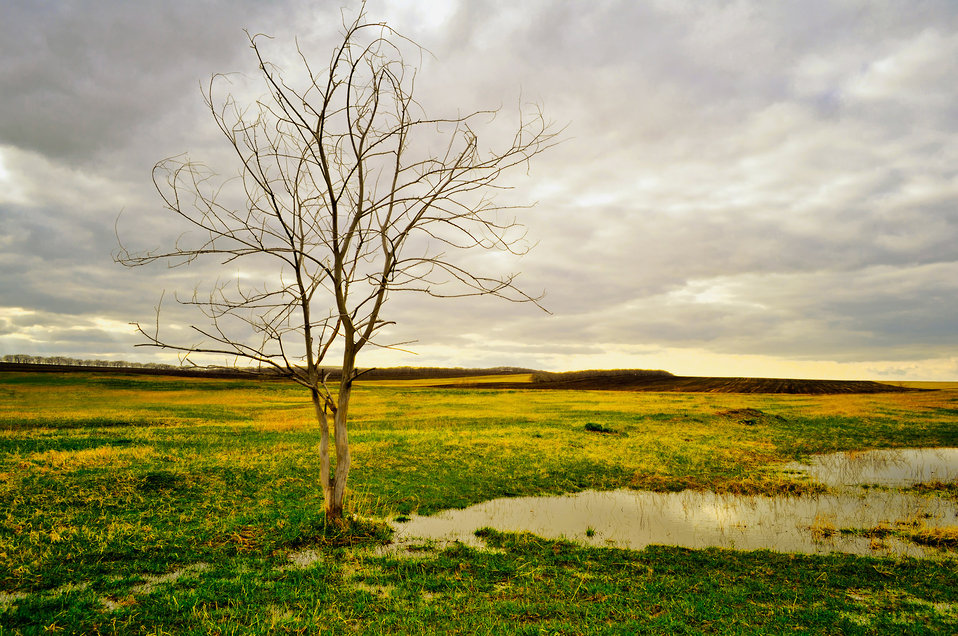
Dry wood

Lonely tree in field.